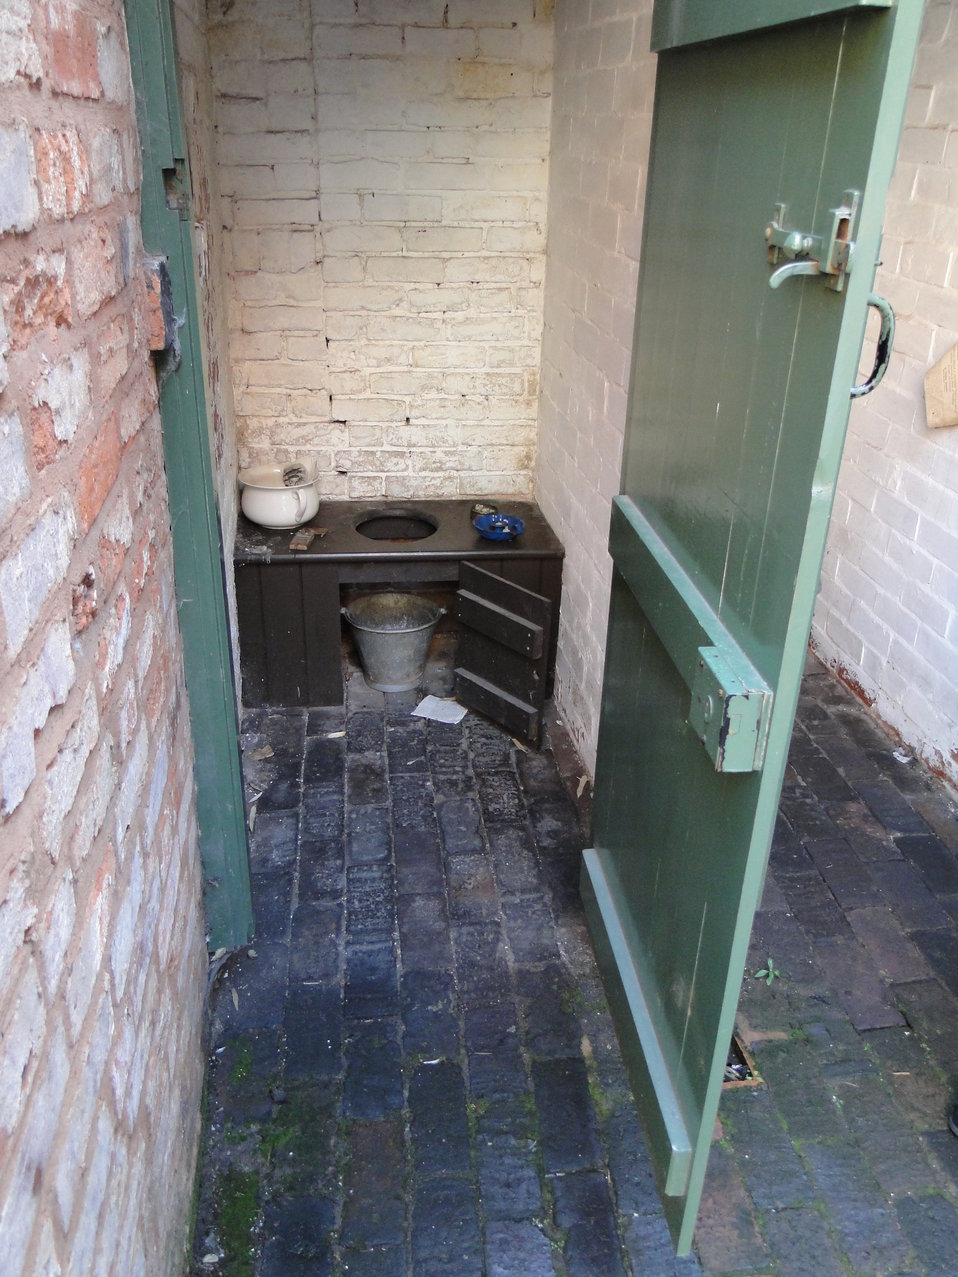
Water closet at the Birmingham Back to Backs